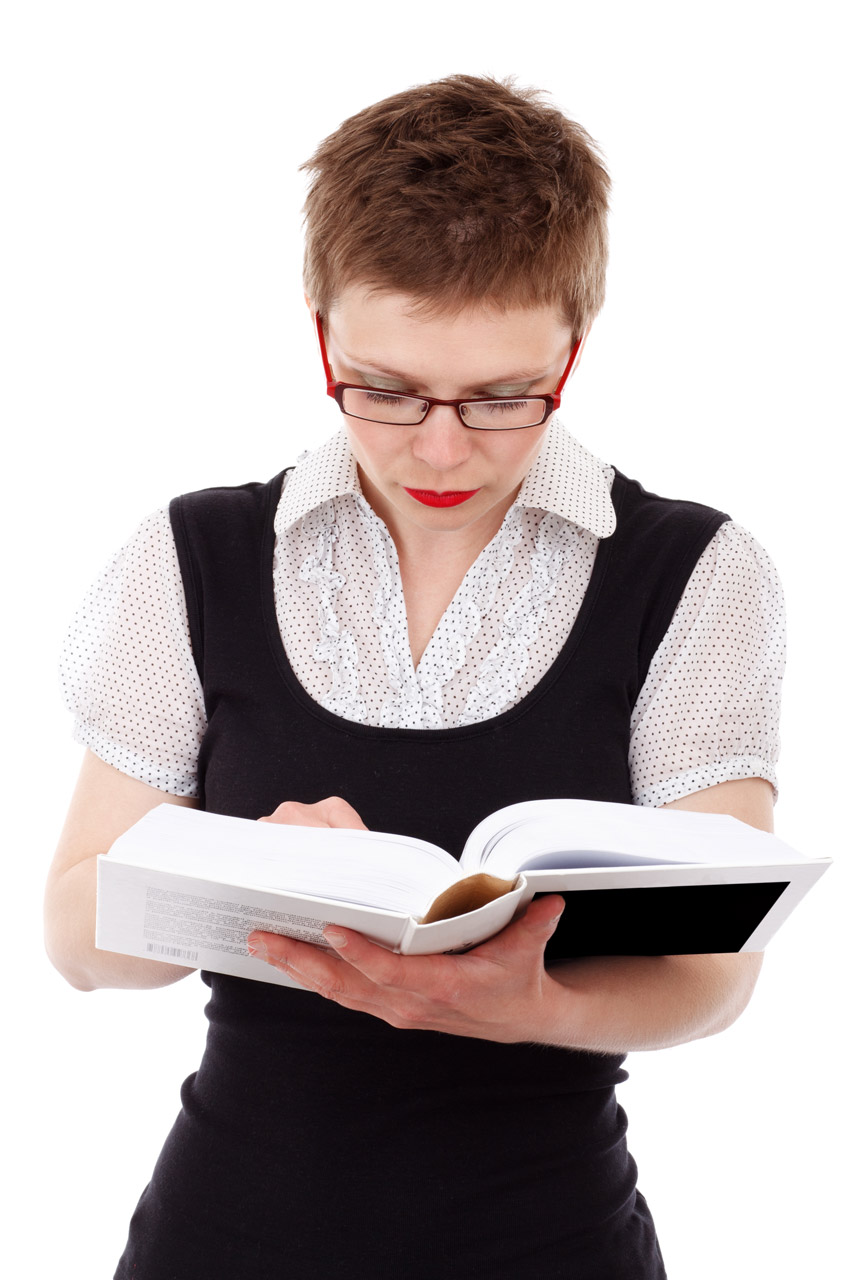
Woman reading a book

Young woman reading a book isolated on white background.